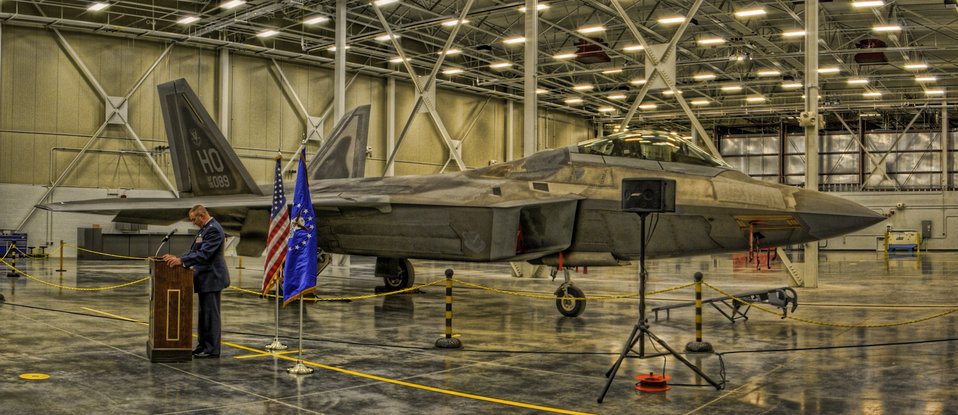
F-22 heavy maintenance facility at Hill Air Force Base

U.S. Air Force Lt. Col. Eric North, chief of F-22 depot operations, speaks during a ribbon-cutting ceremony Jan. 12, 2012 for the new F-22 heavy maintenance facility at Hill Air Force, Utah. North served as the narrator for the ceremony and was joined by U.S. Air Force Maj. Gen. Andrew Busch, commander of the Ogden Air Logistics Center, and U.S. Rep. Rob Bishop in officially opening the facility. The U.S. Army Corps of Engineers Sacramento District oversaw construction of the 96,000-square-foot facility.